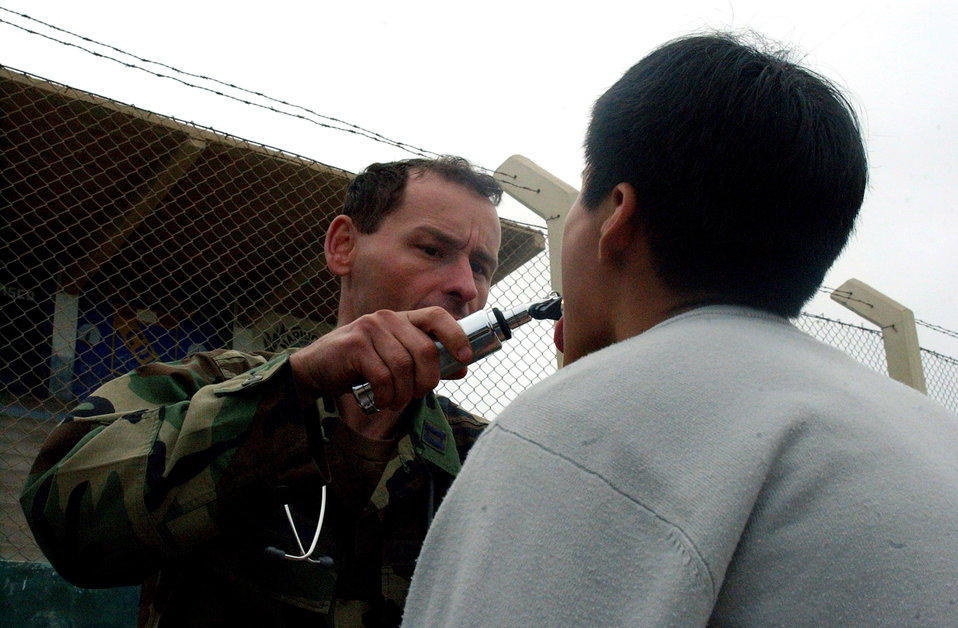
Relief in Peru

Capt. William Ingram checks the throat of a Peruvian boy complaining of a sore throat and cough Aug. 21 in Pisco, Peru. Captain Ingram is a physician's assistant for Joint Task Force-Bravo's medical element. The humanitarian relief task force was sent to Pisco following the 8.0 magnitude earthquake that struck the region Aug. 15.